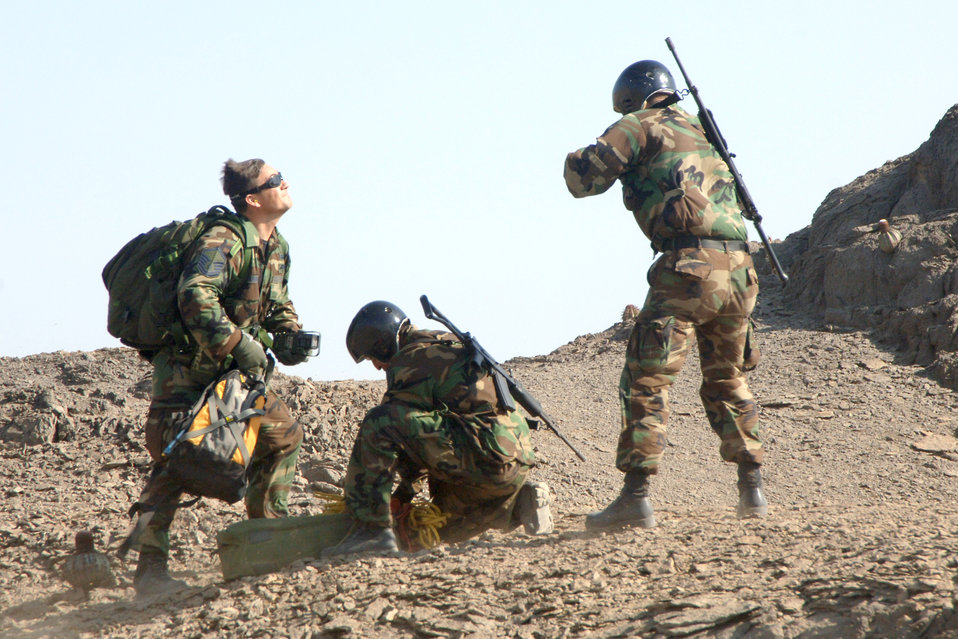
U.S., Peruvian Air Forces reach milestone

Master Sgt. Jesse Arnold looks up to the helicopter above as members of the U.S. and Peruvian Air Forces perform a joint combat search and rescue exercise Feb 14 near Chiclayo, Peru. The exercise was part of Falcon and Condor 2007, a joint exercise between the U.S. and Peruvian Air Forces.